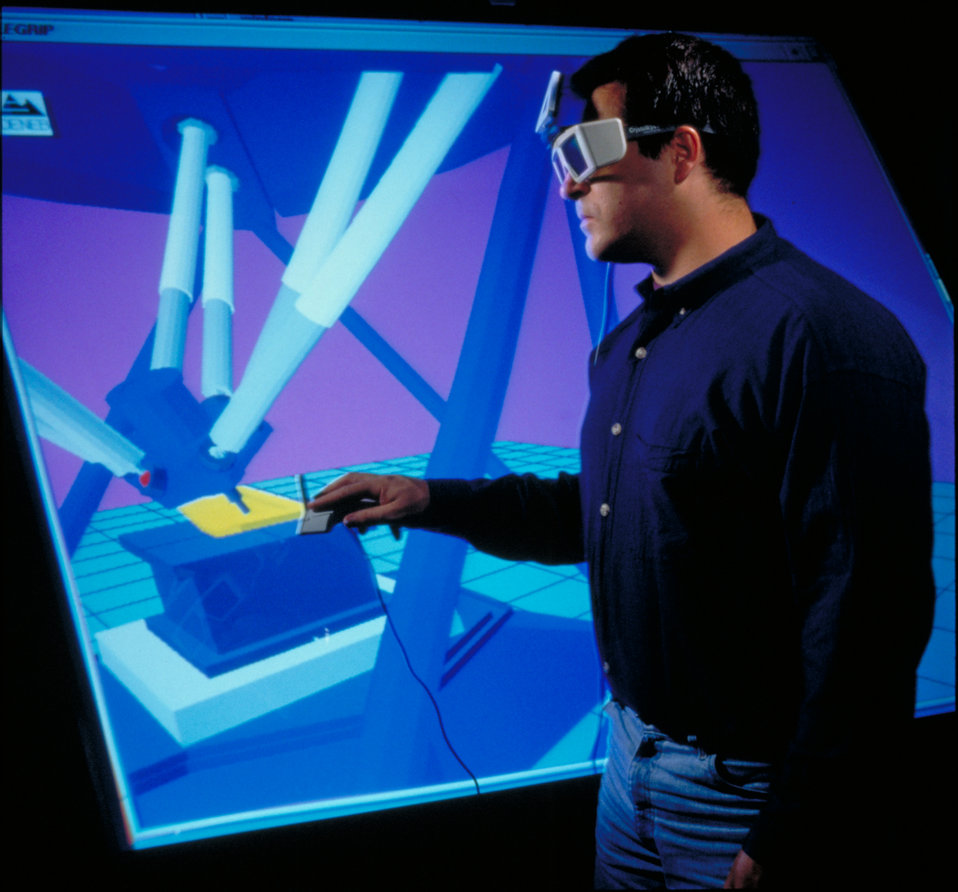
Hexapod machine

Virtual reality environments are increasingly used in industry to realistically simulate new manufacturing processes before they are tried on the factory floor. Here, NIST mechanical engineer, Joseph Falco, uses a virtual reality 'immersive environment' to simulate use of a hexapod machine tool. 'Octahedral hexapod' machine tools represent the first major departure in machine tool design in nearly a century. The machines use an unusual support system technology that provides superior versatility, stiffness, speed, and accuracy.

Courtesy of NIST, photo by Kathie Koenig Simon